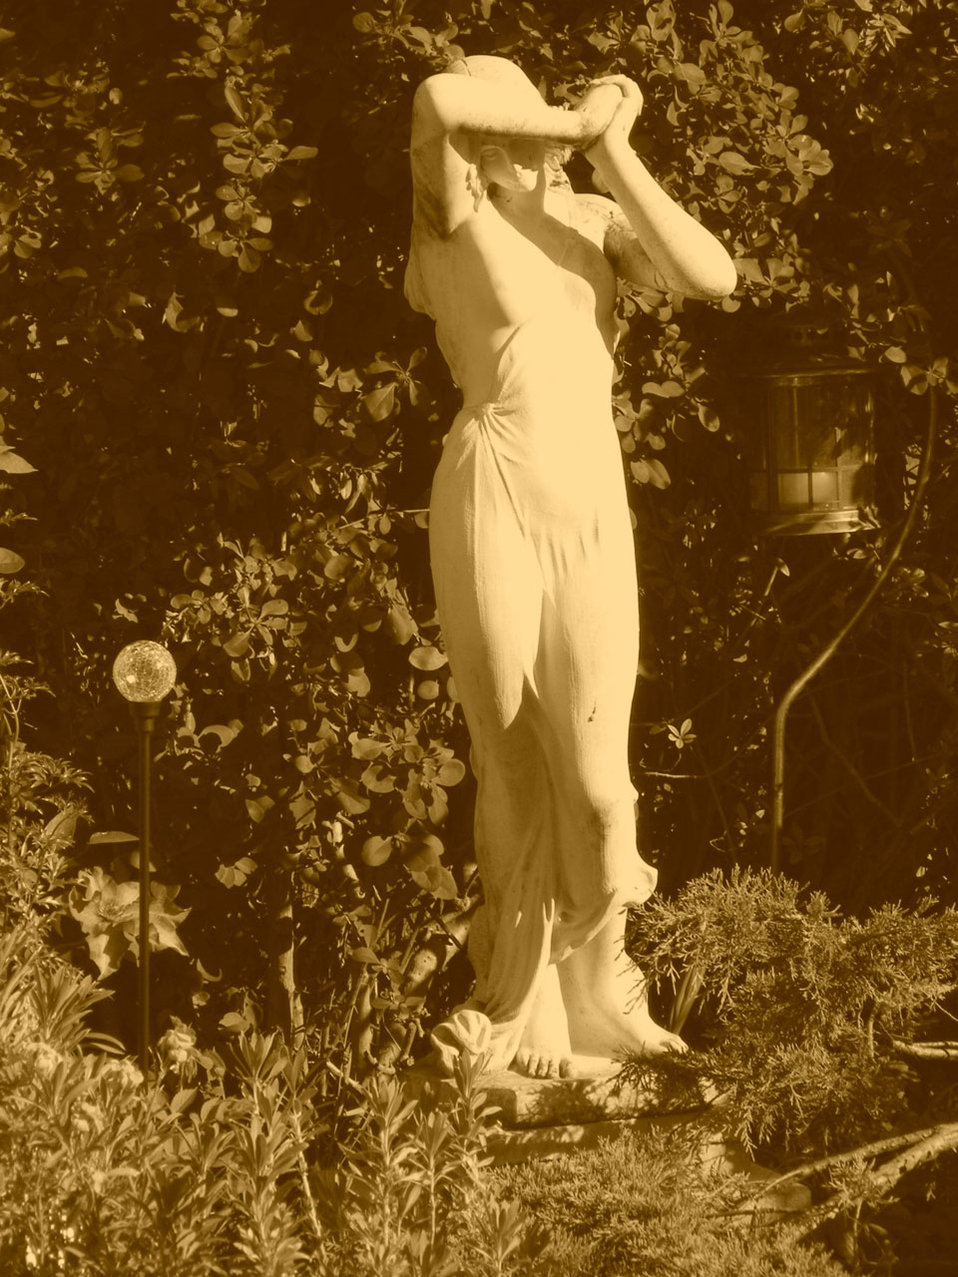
Shy maiden

Garden statue, shy maiden.